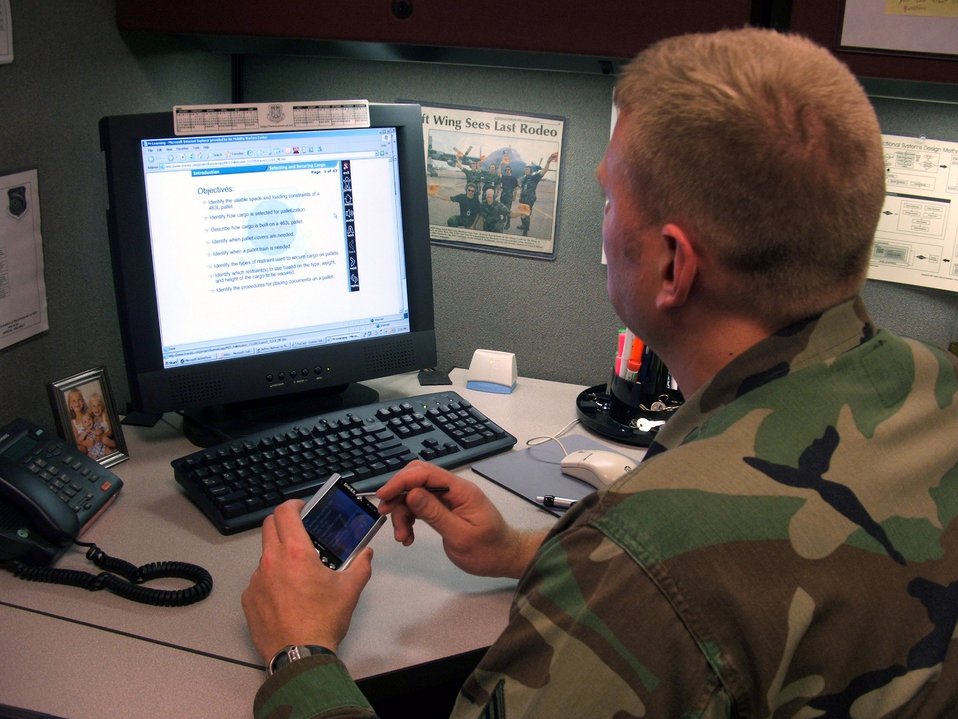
Air transportation career field beneficiary of mobile learning initiative

FORT DIX, N.J. (AFPN) -- Tech. Sgt. Jeff Norway programs a personal digital assistant device for use in the Air Mobility Warfare Center mobile learning initiative for the Air Force air transportation career field.